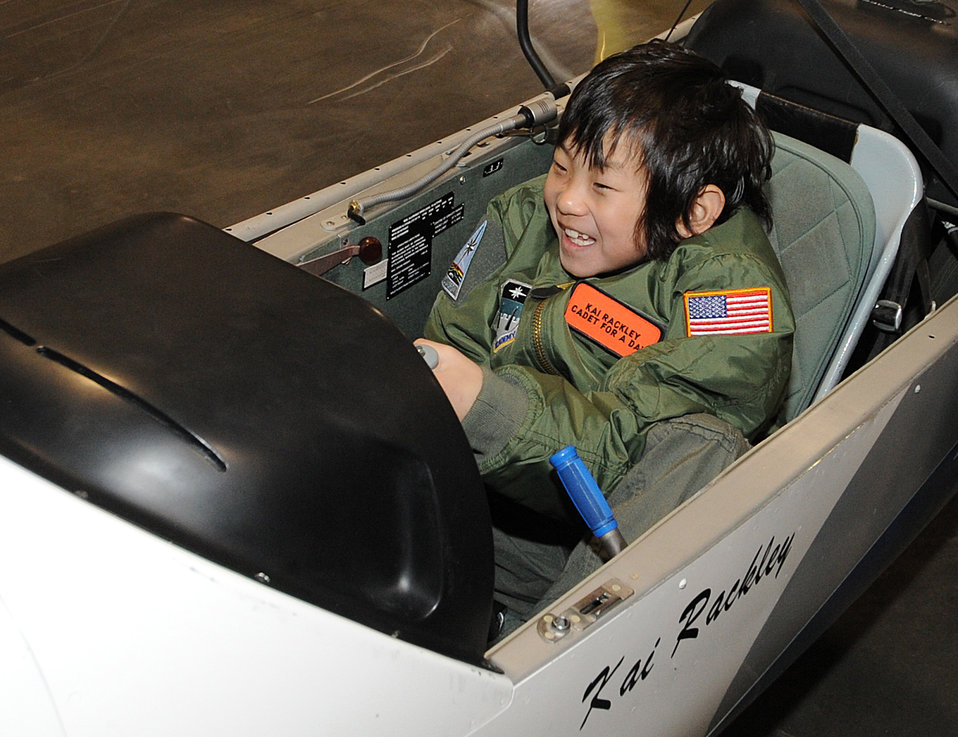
Academy cadets host cadet for a day

Cadet for a Day Kai Rackley checks out the controls of a glider at the U.S. Air Force Academy's airfield March 5, 2010. High winds grounded the flight, but Kai, 10, later got to sit at the controls of a flight simulator. Cadet Squadron 12 hosted Kai and his family for the two-day visit March 4-5. The Cadet for a Day program is sponsored by the Make-A-Wish Foundation.